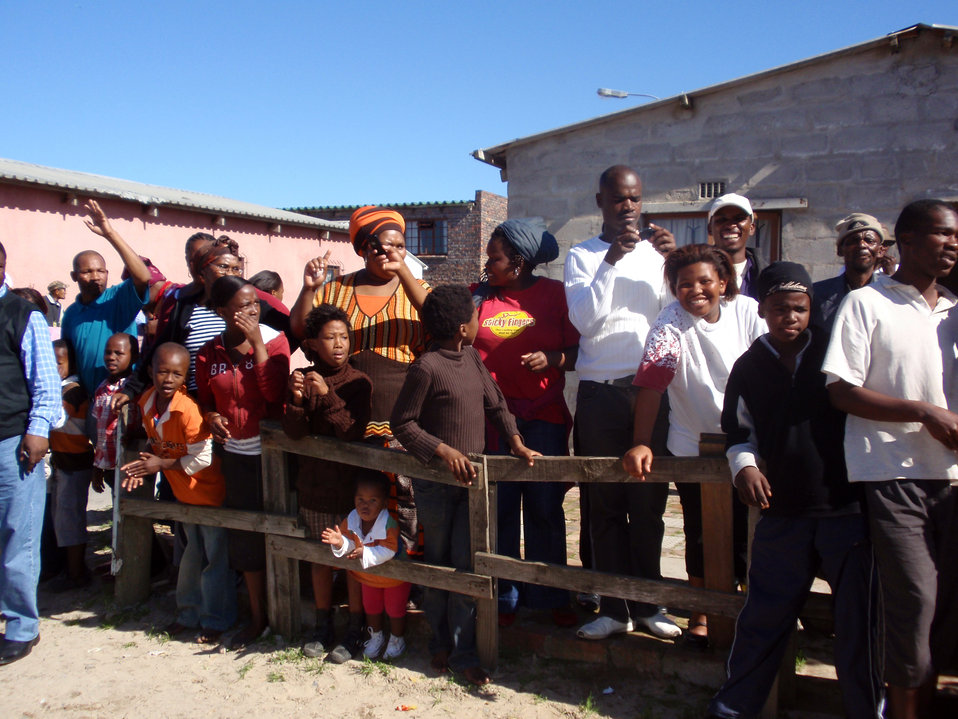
Behind the Scenes: Secretary Clinton Visits Victoria Mxenge Housing Development

People greet U.S. Secretary of State ?Hillary Rodham Clinton during her arrive at the Victoria Mxenge Housing Development in Cape Town, South-Africa August 8, 2009.